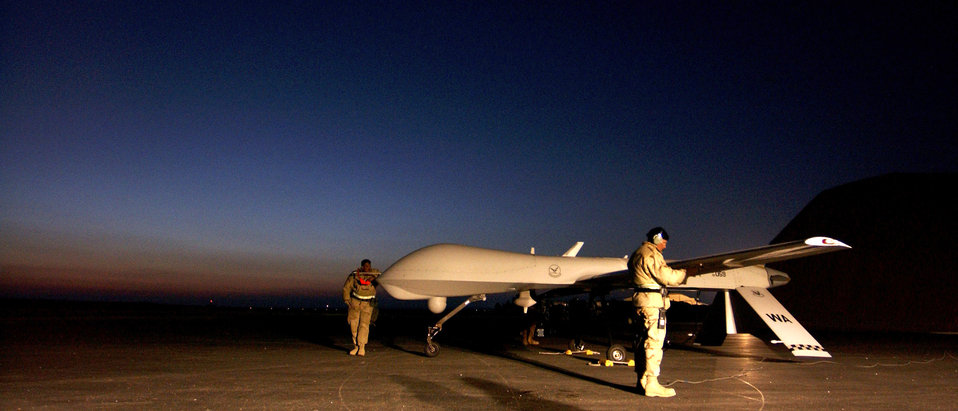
Predator mission

OPERATION IRAQI FREEDOM - Maintenance workers perform last minute preflight checks on an RQ-1 Predator before a mission at a forward-deployed location. The Department of Defense's Unmanned Aerial Vehicles Roadmap provides a defensewide vision for UAVs and related technology.